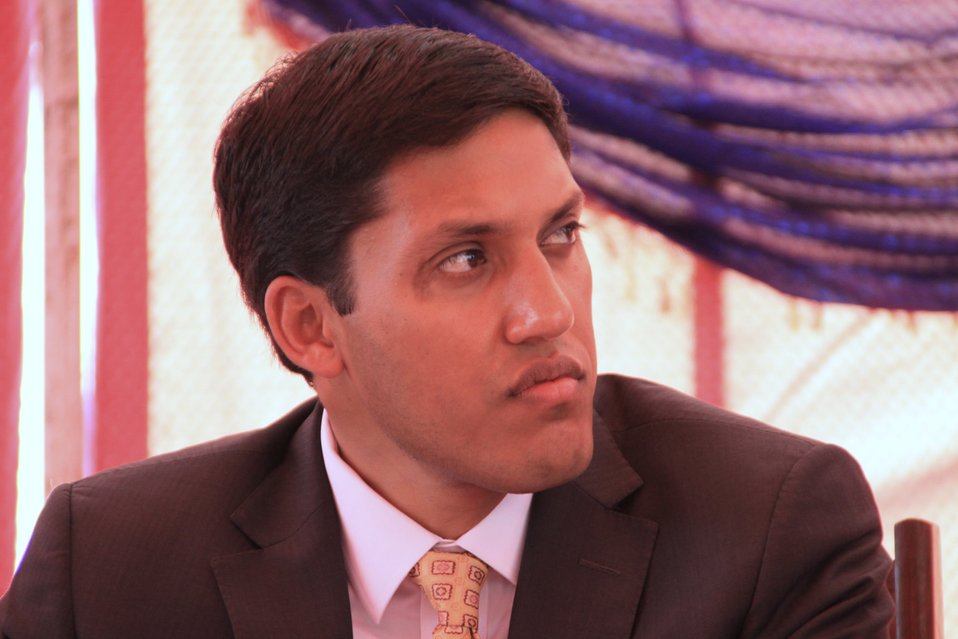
Baddam Bagh Farm